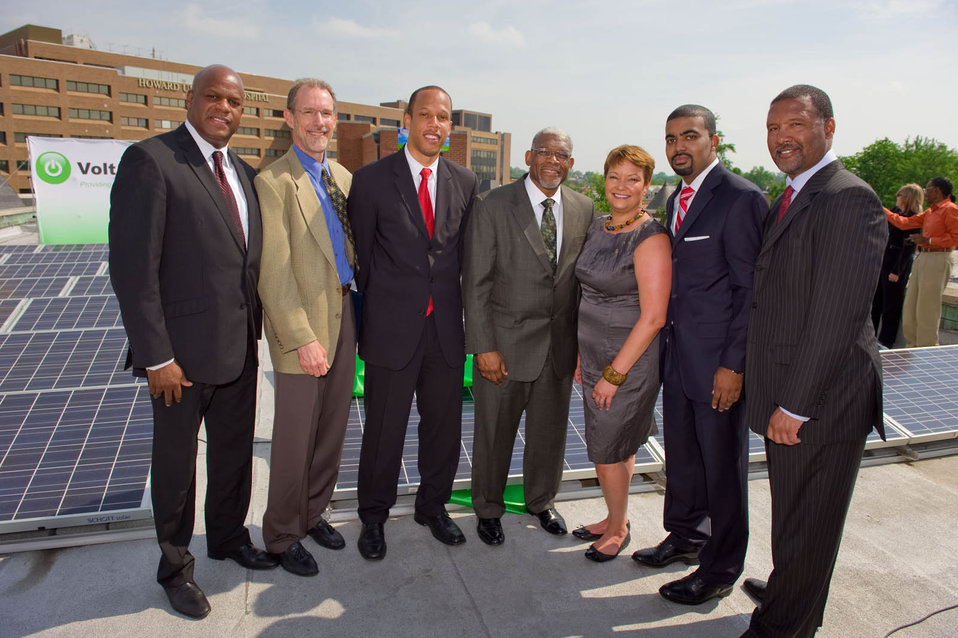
2011-05-03 FlaAveSolar 022